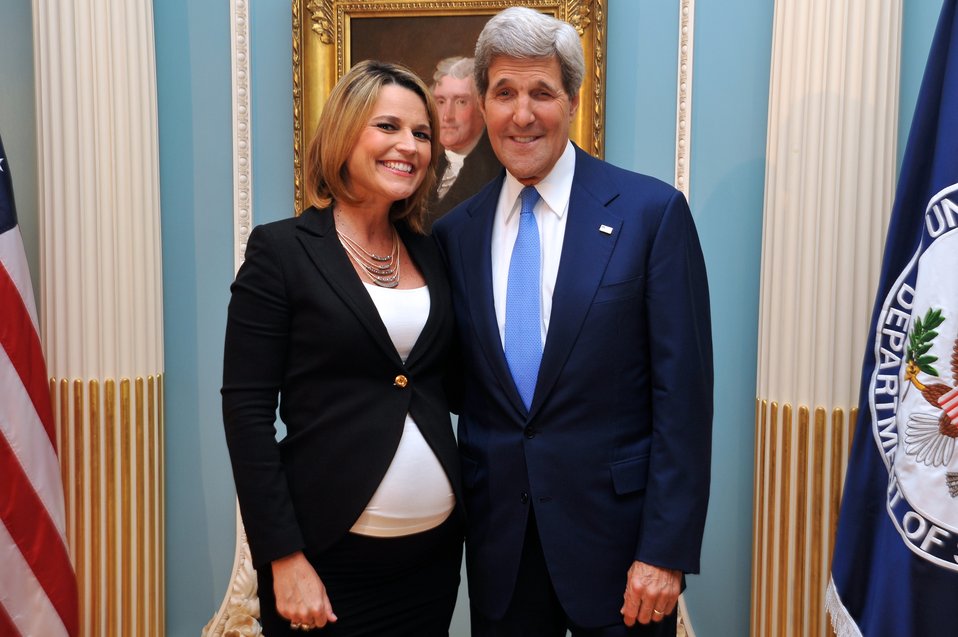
Secretary Kerry Poses With 'Today's' Guthrie After Interview

U.S. Secretary of State John Kerry poses with NBC News 'Today' show co-anchor Savannah Guthrie after an interview in the Treaty Room at the State Department on June 18, 2014.